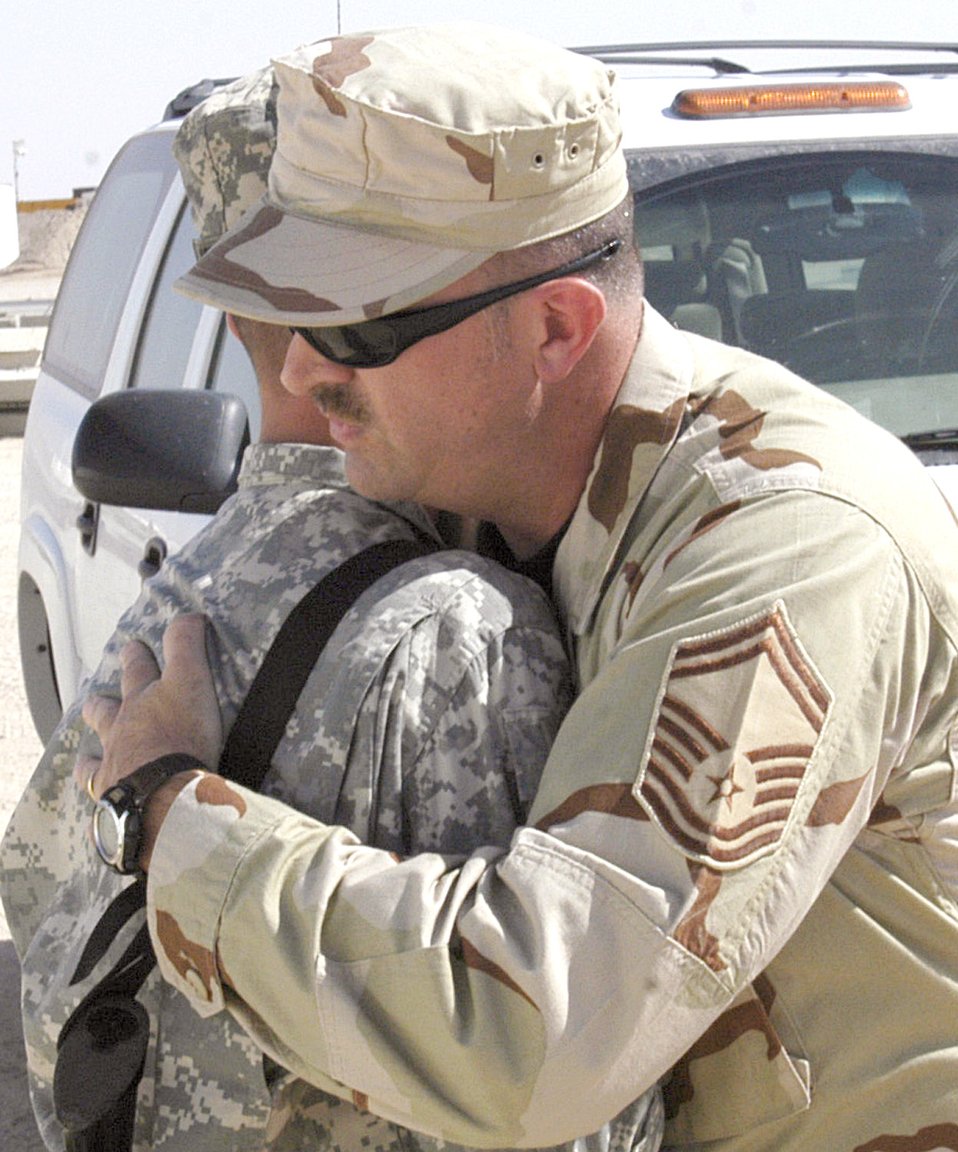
Operation Iraqi Freedom

SOUTHEAST ASIA -- Senior Master Sgt. James Sedoris hugs his son, Army Pfc. Weston Sedoris, one last time before departing an Army camp where the two enjoyed an unexpected reunion. Sergeant Sedoris recently came across his son while dropping off some Airmen for a briefing at the Army camp. Sergeant Sedoris is assigned to the 386th Expeditionary Medical Group at a forward-deployed location.